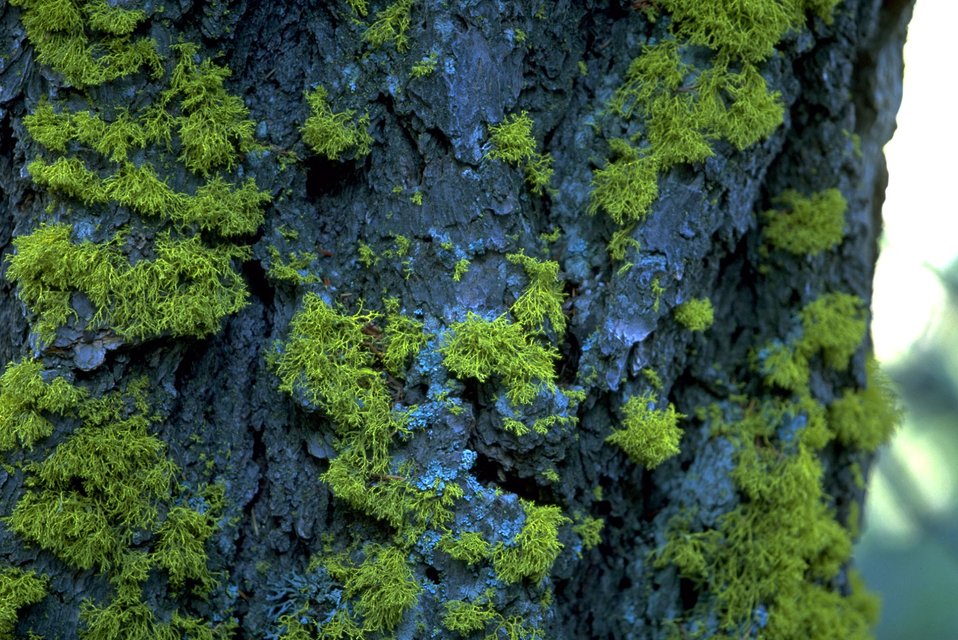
Moss growning on a tree trunk